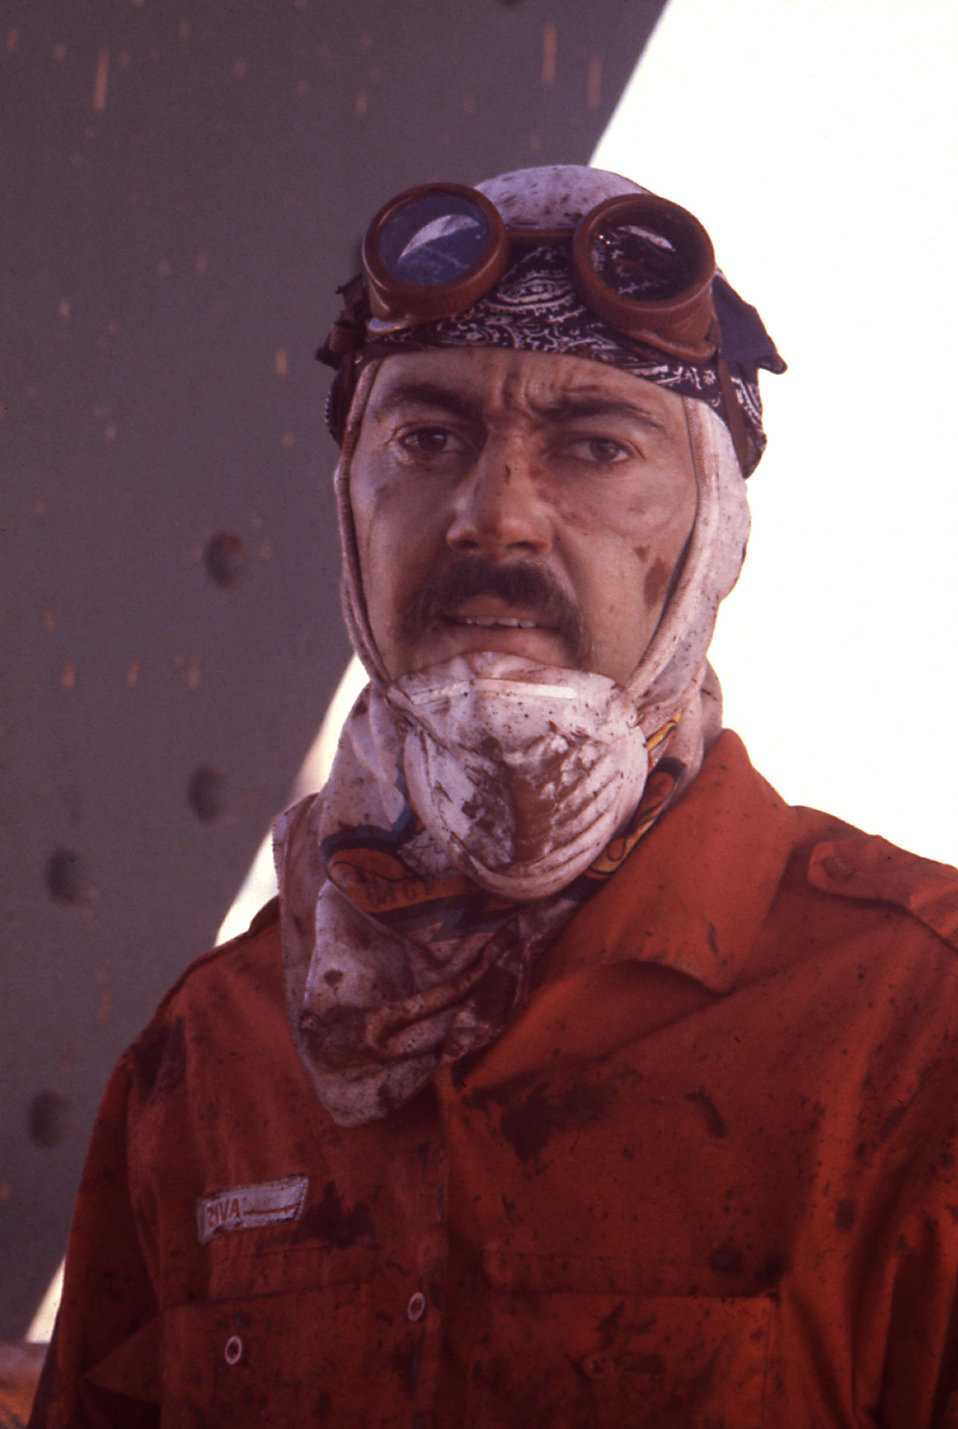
The Tobin Bridge in Boston, MA, shed flakes of lead-based paint onto subjacent neighborhoods and the Mystic River below.